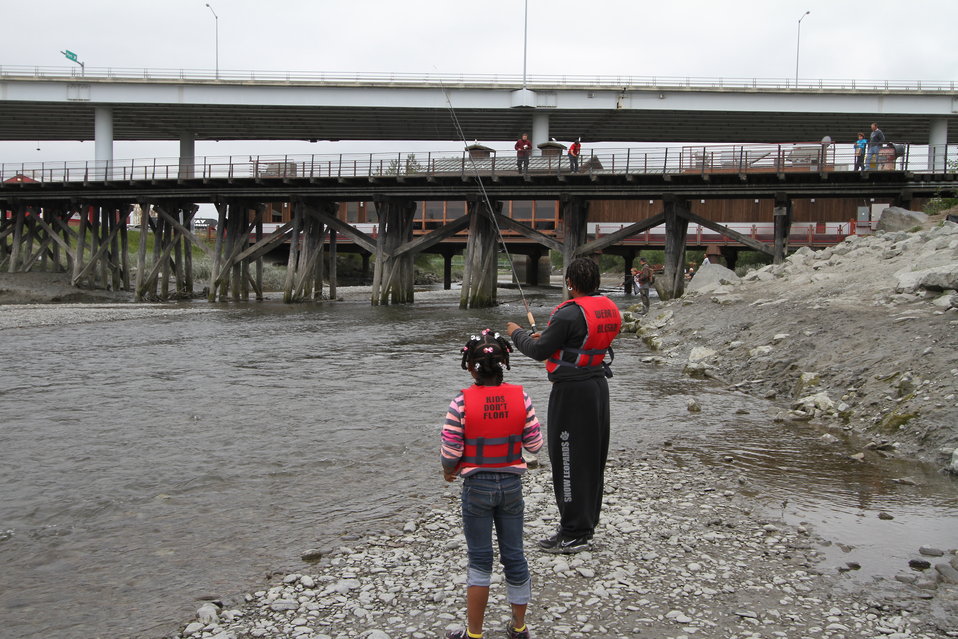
2012-Anchorage-Play

Learning to fish
Northeast Muldoon Boys and Girls Club youth learned how to fish on Ship Creek in Anchorage as a result of a partnership between the Club, USFWS, Alaska Department of Fish and Game, Alaska Department of Natural Resources, and support from the National Conservation Training Center's Connecting People With Nature funding initiative. USFWS/Katrina Mueller